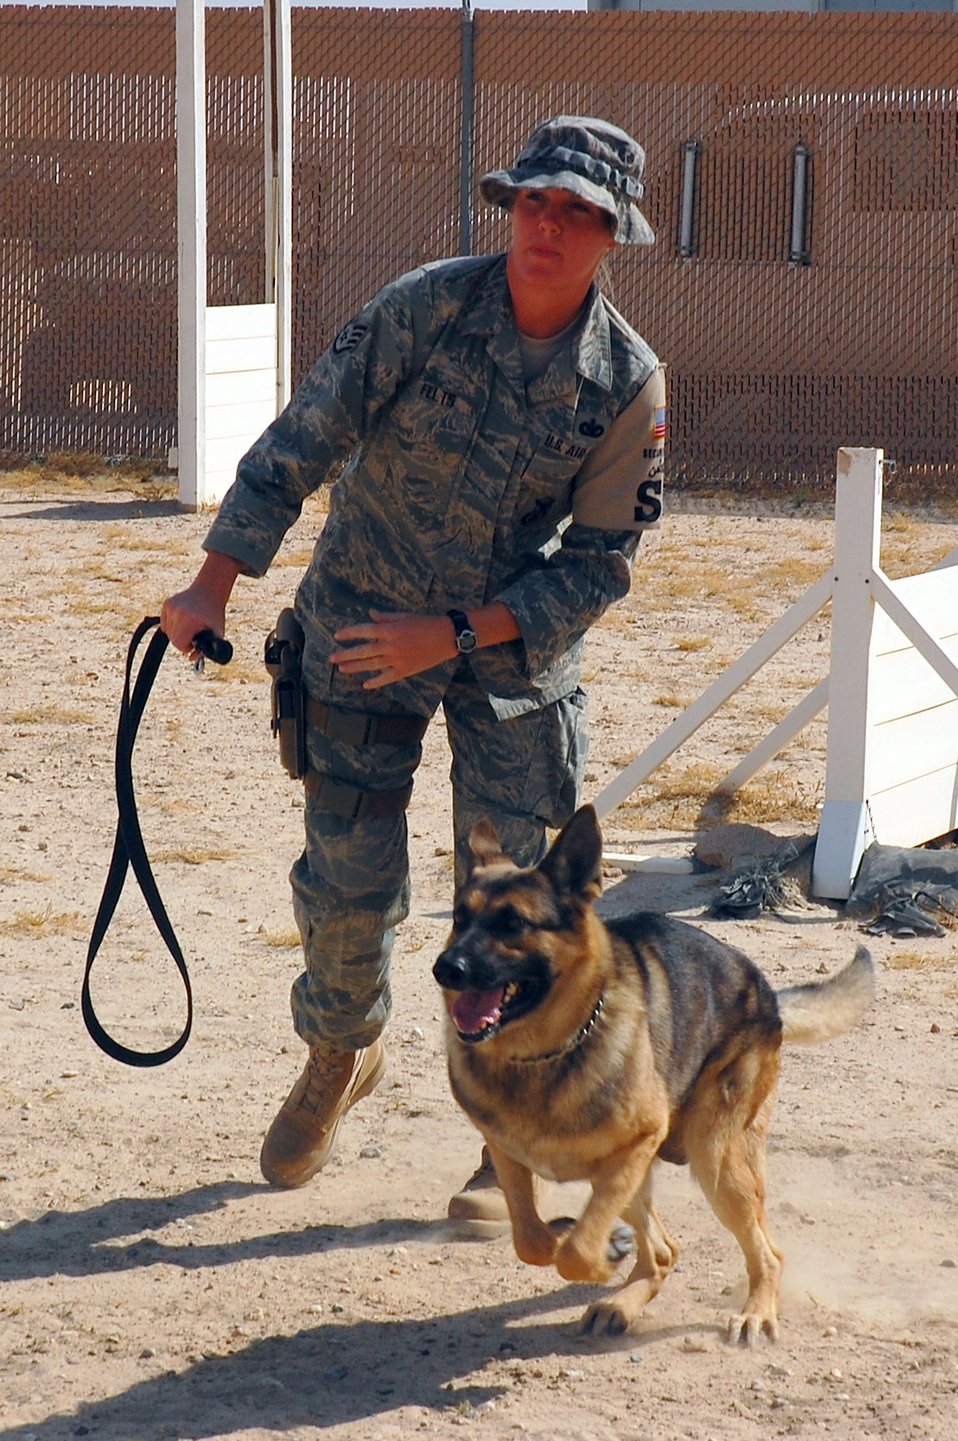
Working like a dog

Staff Sgt. Laura Felts releases her partner, Bert, to attack a decoy during aggression training Sept 19 at a deployed location in Southwest Asia. Sergeant Felts is a 386th Expeditionary Security Forces Squadron military working dog handler, and Bert is a 386th ESFS military working dog. The military working dogs are trained several times a week to keep their skills sharp.